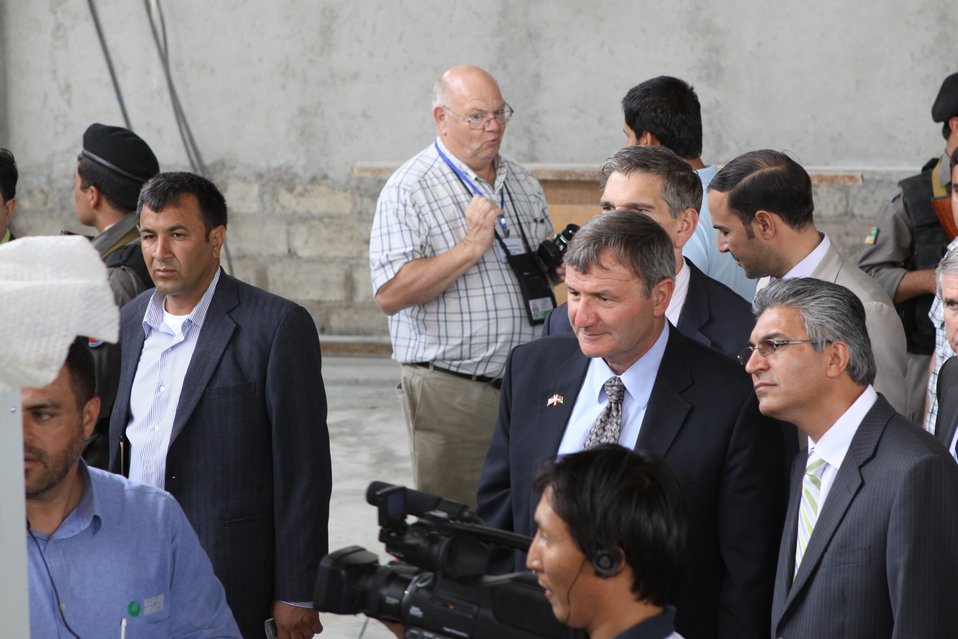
100525 Hirat Marble Conference 435